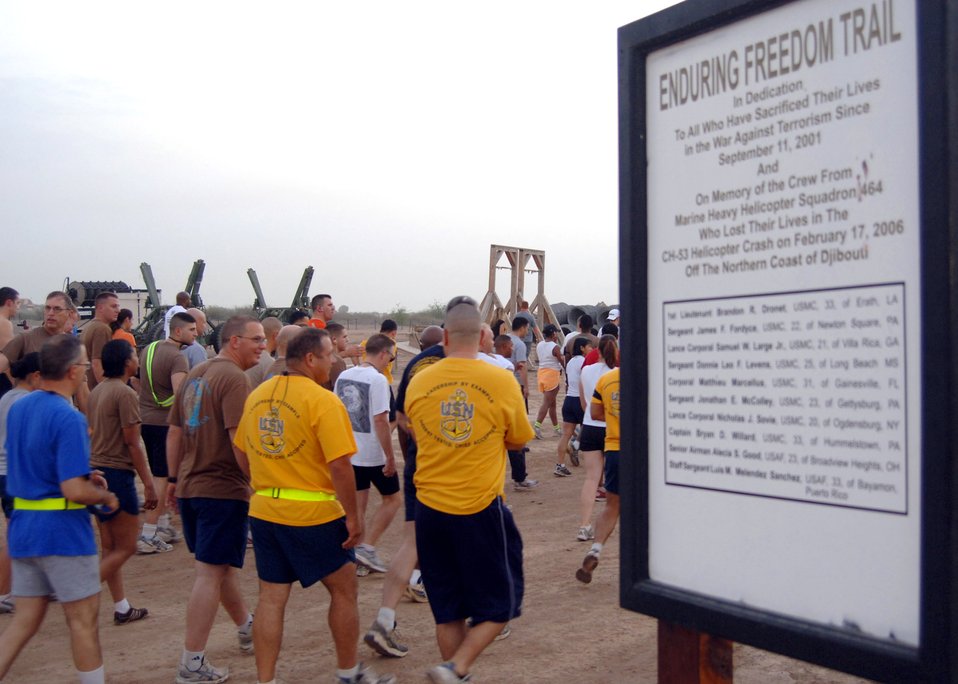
Sept. 11 remembered in Djibouti

Servicemembers deployed to the Combined Joint Task Force-Horn of Africa participate in an early morning Sept. 11 remembrance 5K run Sept. 11 at Camp Lemonier, Djibouti. The run kicked off a day of events sponsored by Combined Joint Task Force-Horn of Africa 2008 Navy chief selectees.